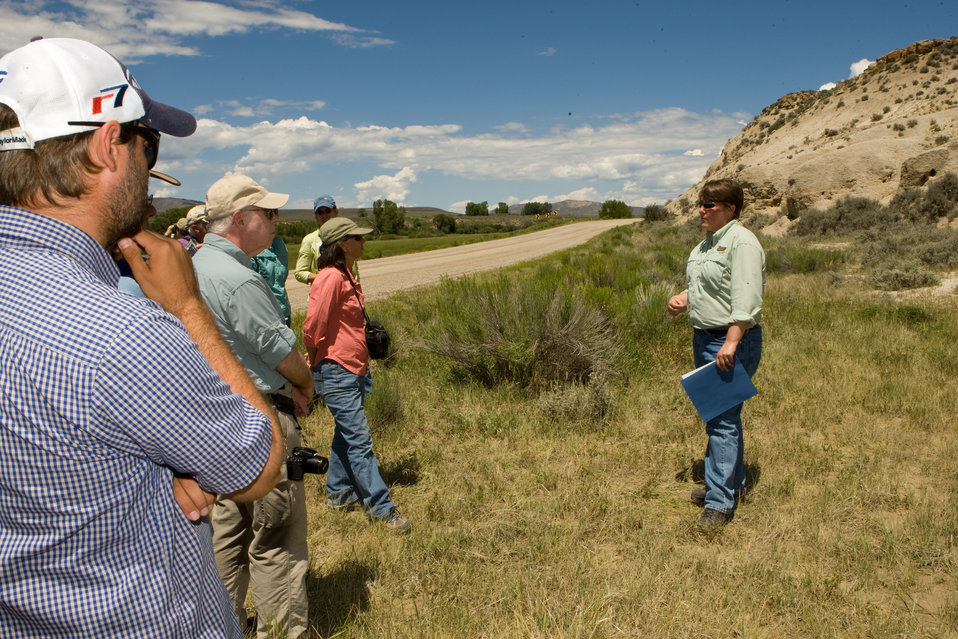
Colorado Rare Plant Conservation Initiative

The Colorado Rare Plant Conservation Initiative (RPCI) is a partnership of 23 statewide and regional agencies, private organizations, and academic institutions working to conserve 121 rare plants in Colorado. As part of these efforts the group developed the Colorado Rare Plant Conservation Strategy, developed Best Management Practices to reduce energy development impacts, addressed climate change, and developed focused strategies for the conservation of individual species at eight priority landscapes. The group has also worked to coordinate volunteer efforts for plant conservation across the state.